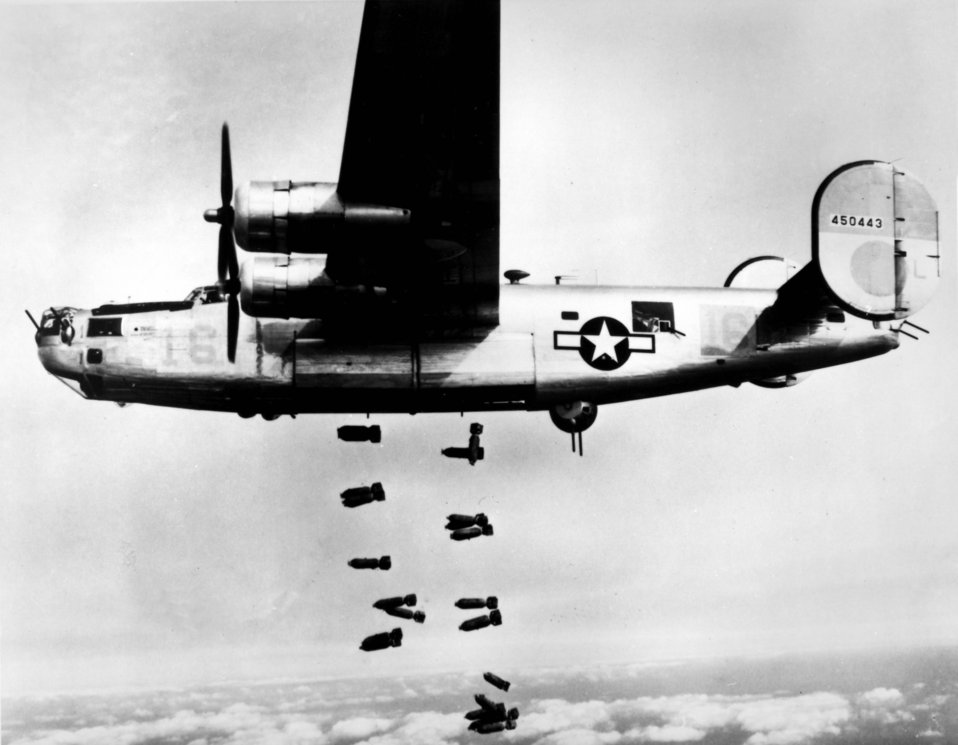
B-24 Liberator

1940's -- A consolidated B-24 Liberator of the 15th A.F. releases its bombs on the railyards at Muhldorf, Germany on 19 March 1945. Bombers of the 15th A.F. are slicing vital rail lines from Vienna to Munich as the air offensive against the enemy reaches an all time high.